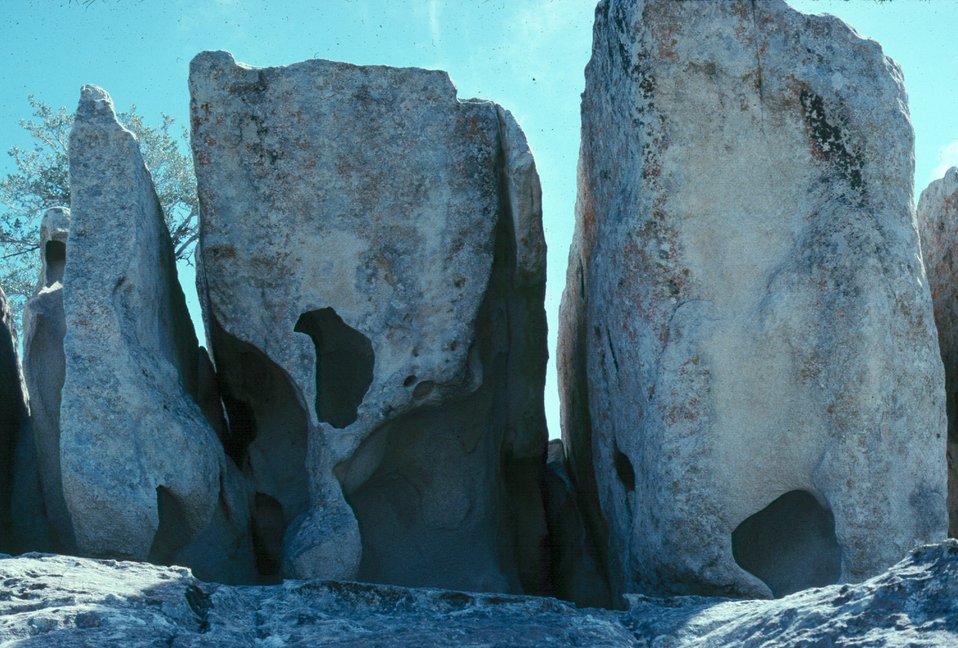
Silent City hollow formations Burley Field Office USRD Upper Snake River District